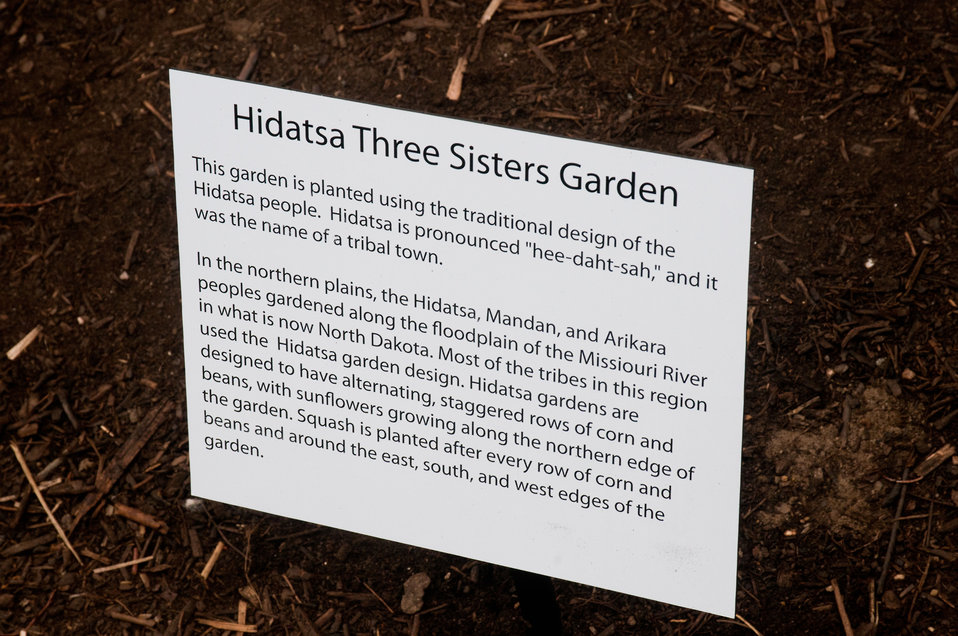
More than 30 students from Eastern and Western Tribes, Southeast Alaska, and Tuba City, Arizona came to the U.S. Department of Agriculture in Washington, DC, on Wednesday, April 27, 20ll to plant vegetable seeds that are indigenous to North America, in particular the Roots of American Agriculture, in a Hidatsa Three Sisters Garden, a traditional design of the Hidatsa people. In the northern planes, the Hidatsa, Mandan, and Arikara peoples gardened along the floodplain of the Missouri River using this design. It is designed to have alternating, staggered rows of corn and beans, with sunflowers growing along the northern edge of the garden. Squash is planted after every row of corn and beans and around the east, south, and west edges of the garden.